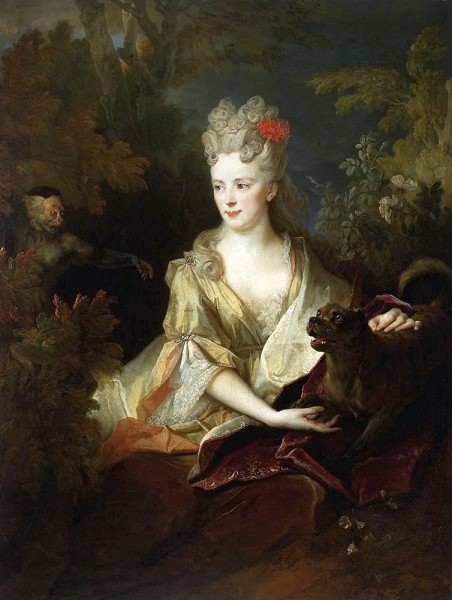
Largillière Portrait of a lady